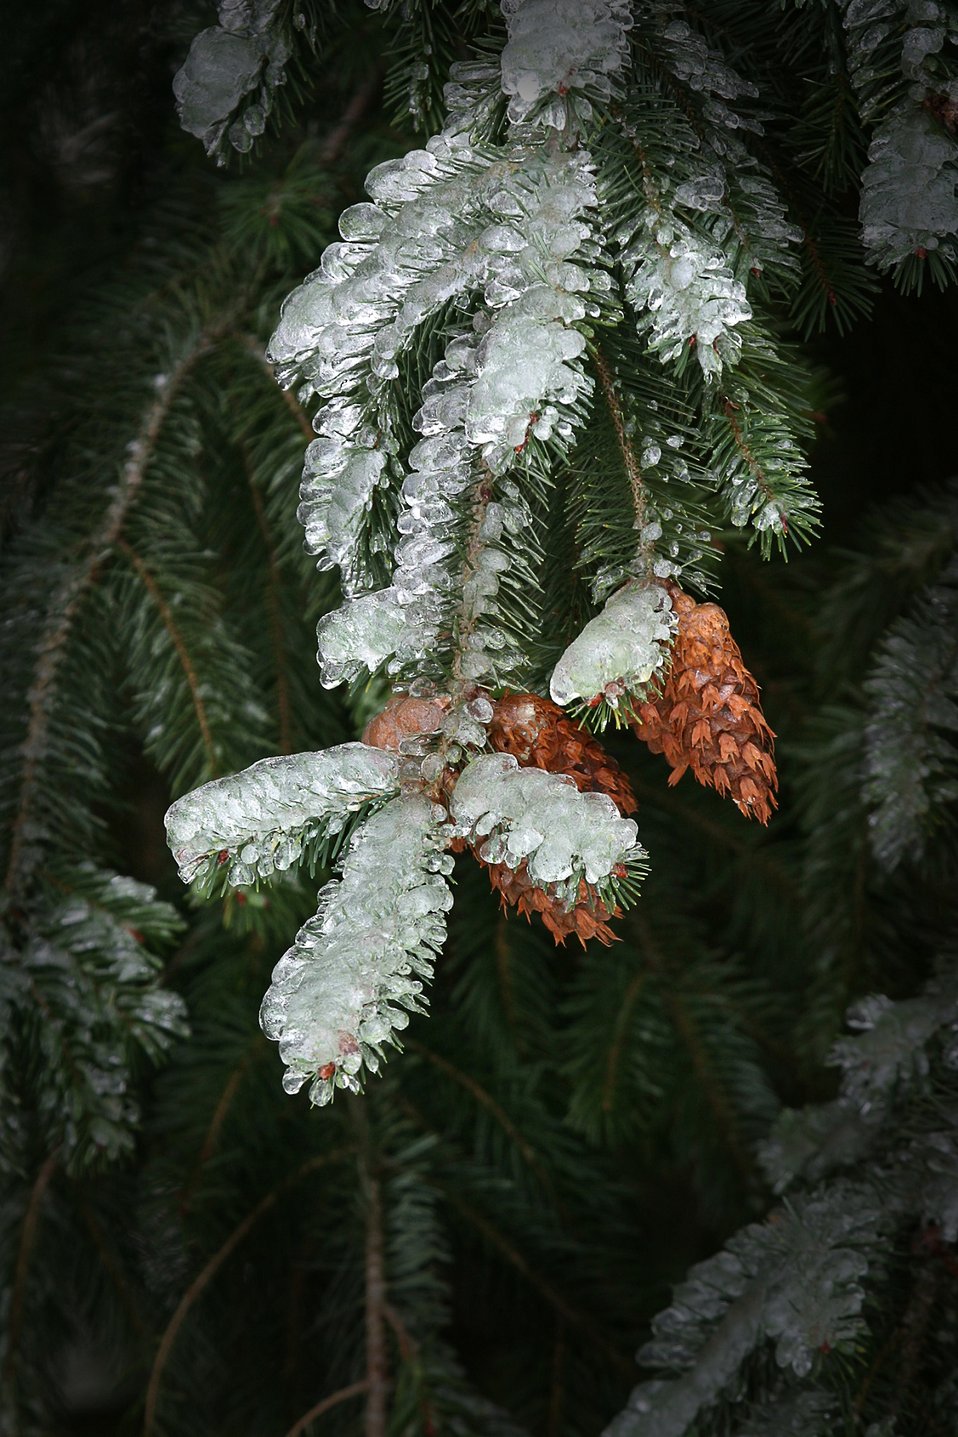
Snow and ice on Douglas Fir Bows and cones during the storm of January 2004.